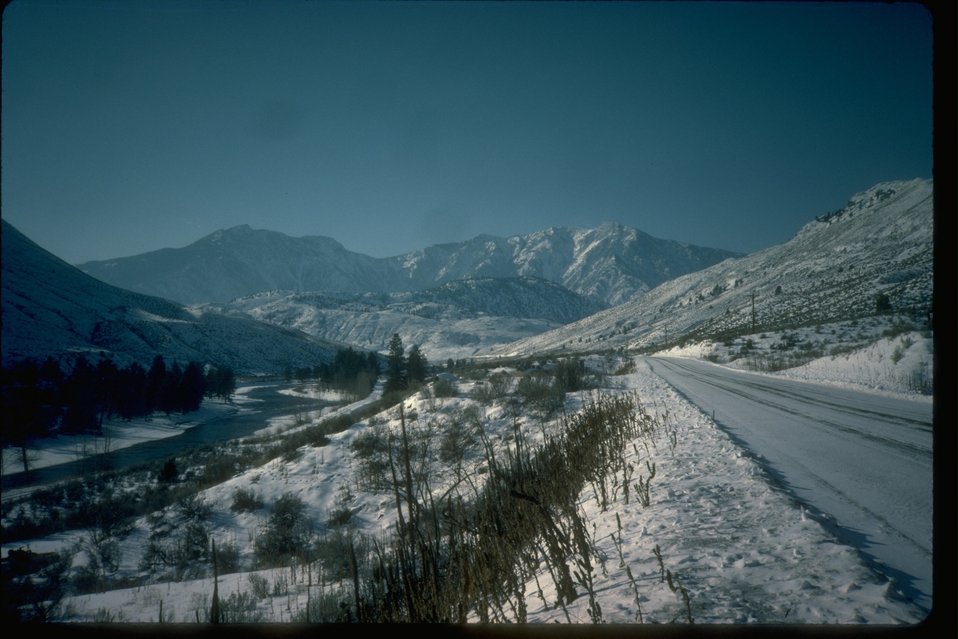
Winter on Chopaka Mountain and Similkameen River in Okanogan County, WA.